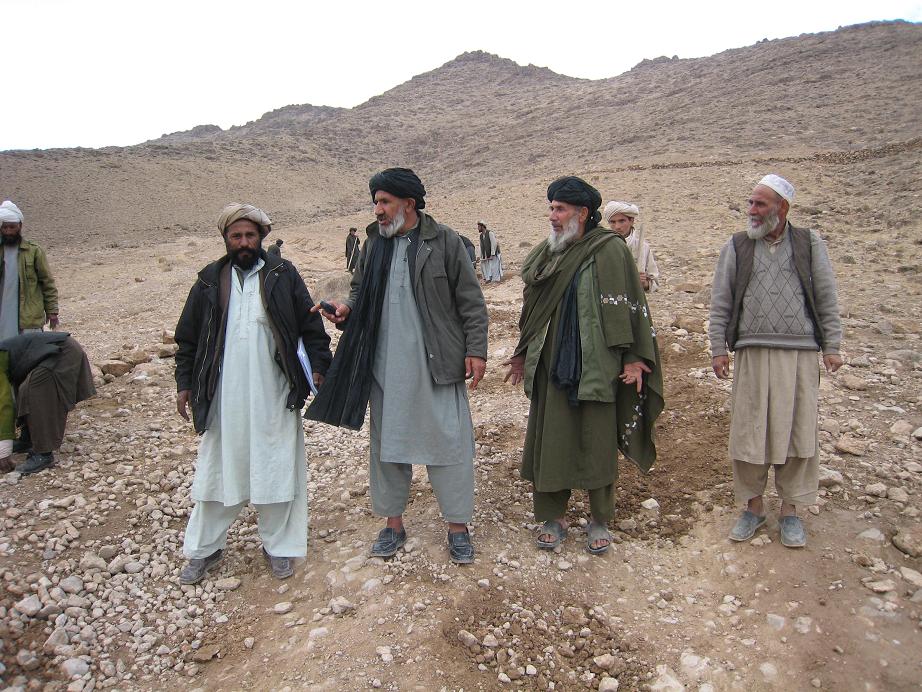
DSO with community leader